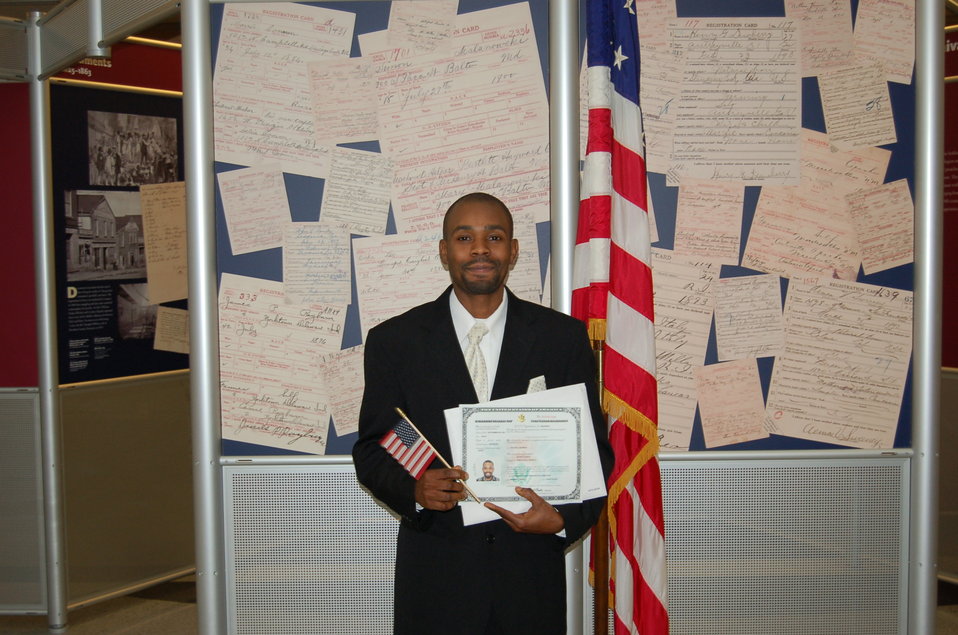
New Citizens